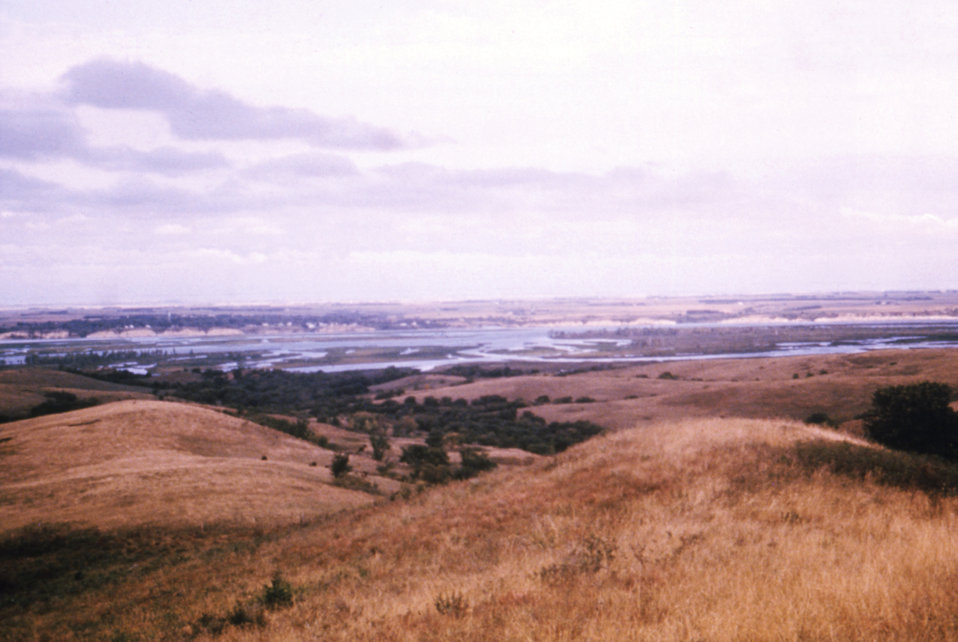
These bluffs overlook Lewis and Clark Lake in Santee, Nebraska, and were shot during a CDC vector-borne disease investigation.